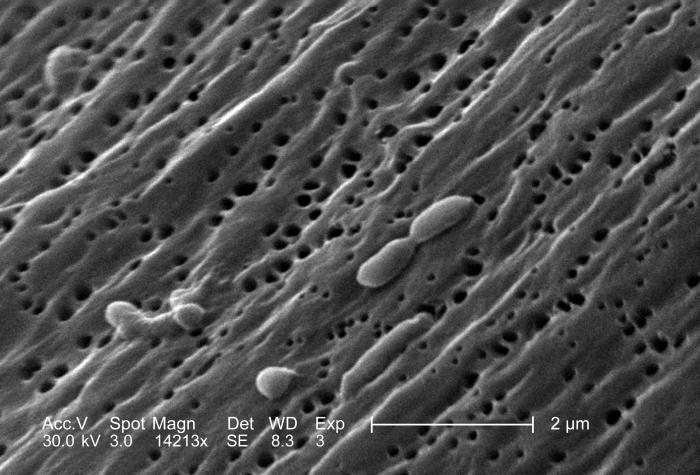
This scanning electron micrograph (SEM) depicted a number of Vibrio cholerae bacteria of the serogroup 01, that had been photographed as two of them were about to complete the process of cellular division; Magnified 14213x.